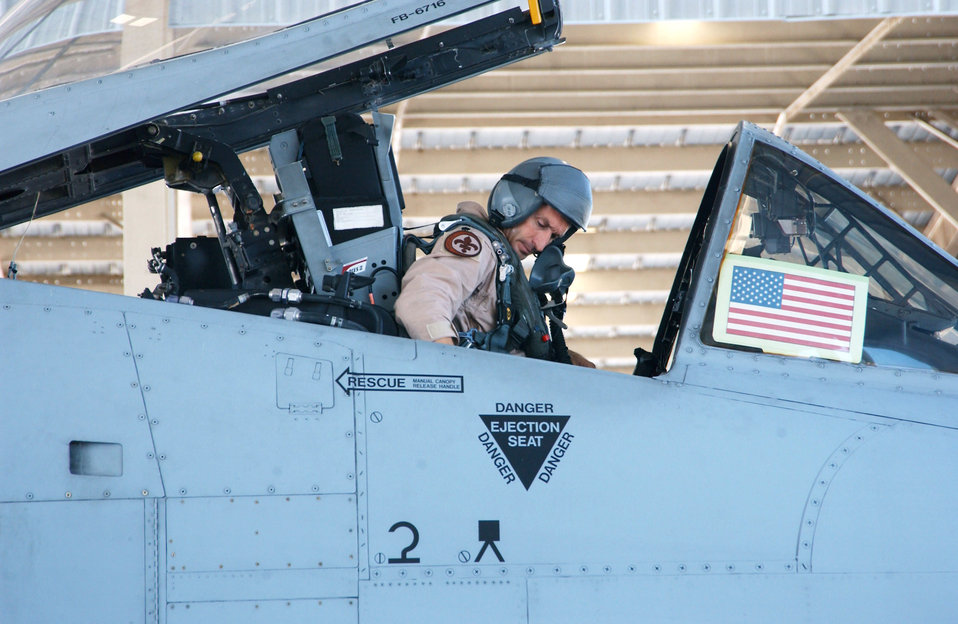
Off we go...

NAVAL AIR STATION JOINT RESERVE BASE NEW ORLEANS (AFPN) -- Lt. Col. Bruce Miller readies his A-10 Thunderbolt II for a long flight overseas. Eight A-10s and nearly 100 reservists from the 926th Fighter Wing left here Labor Day weekend for an undisclosed location. They are part of an air and space expeditionary force beginning a 120-day tour to help fight the war on terrorism. Colonel Miller is the 706th Fighter Squadron commander.